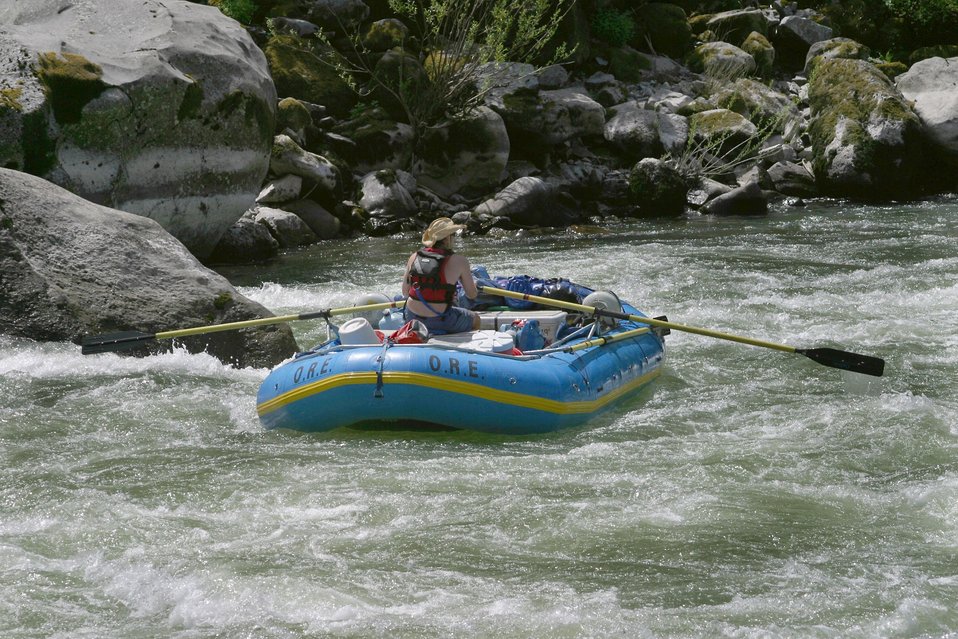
Wild section of the Rogue River from Grave Creek to Foster Bar May 19 to May 22.